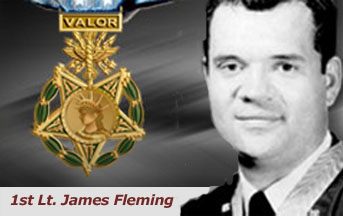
1st Lt. James Fleming

On Nov. 28, 1968, then 1st Lt. James P. Fleming exposed his UH-1F helicopter to intense hostile fire while rescuing a special forces reconnaissance patrol. Lieutenant Fleming balanced on the edge of vulnerability over the jungles of Southeast Asia, thereby receiving a Medal of Honor for his gallantry.